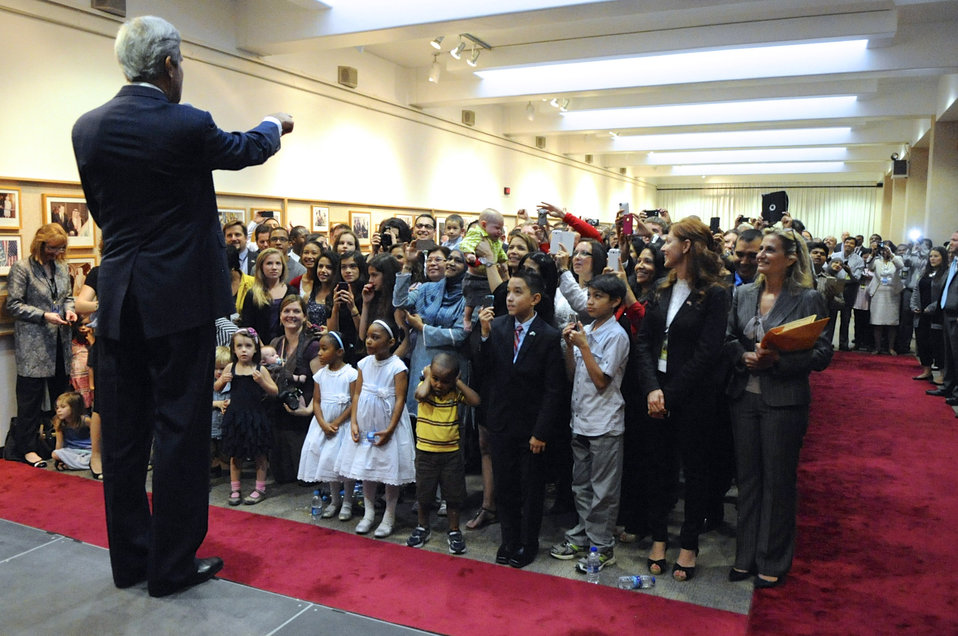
Secretary Kerry Addresses Embassy Riyadh Staff

U.S. Secretary of State John Kerry greets members of the Embassy Riyadh staff and their family members during a visit to Saudi Arabia on November 4, 2013.